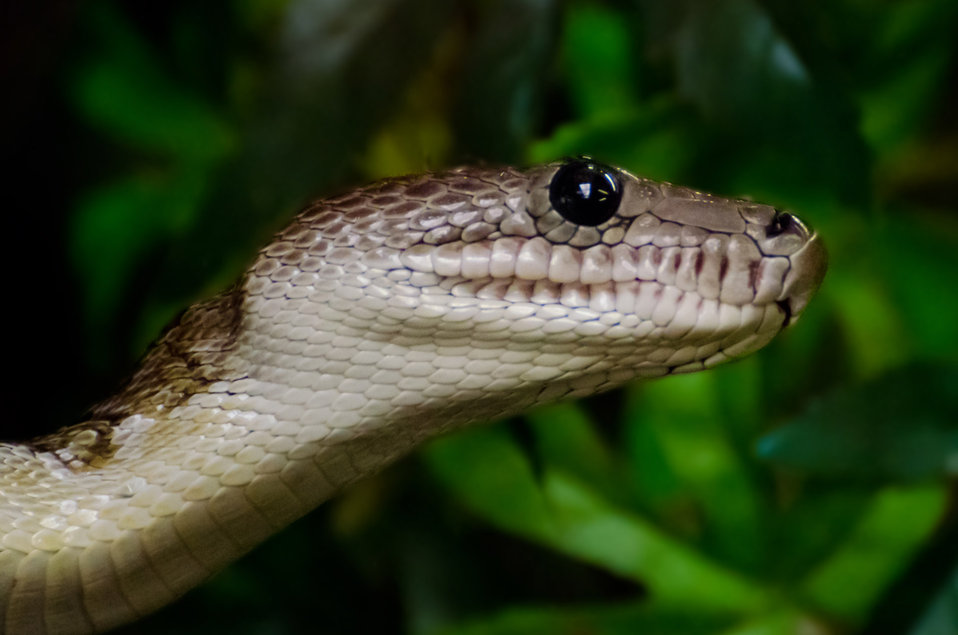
Snake - animals

Cuban boa - epicrates angulifer.